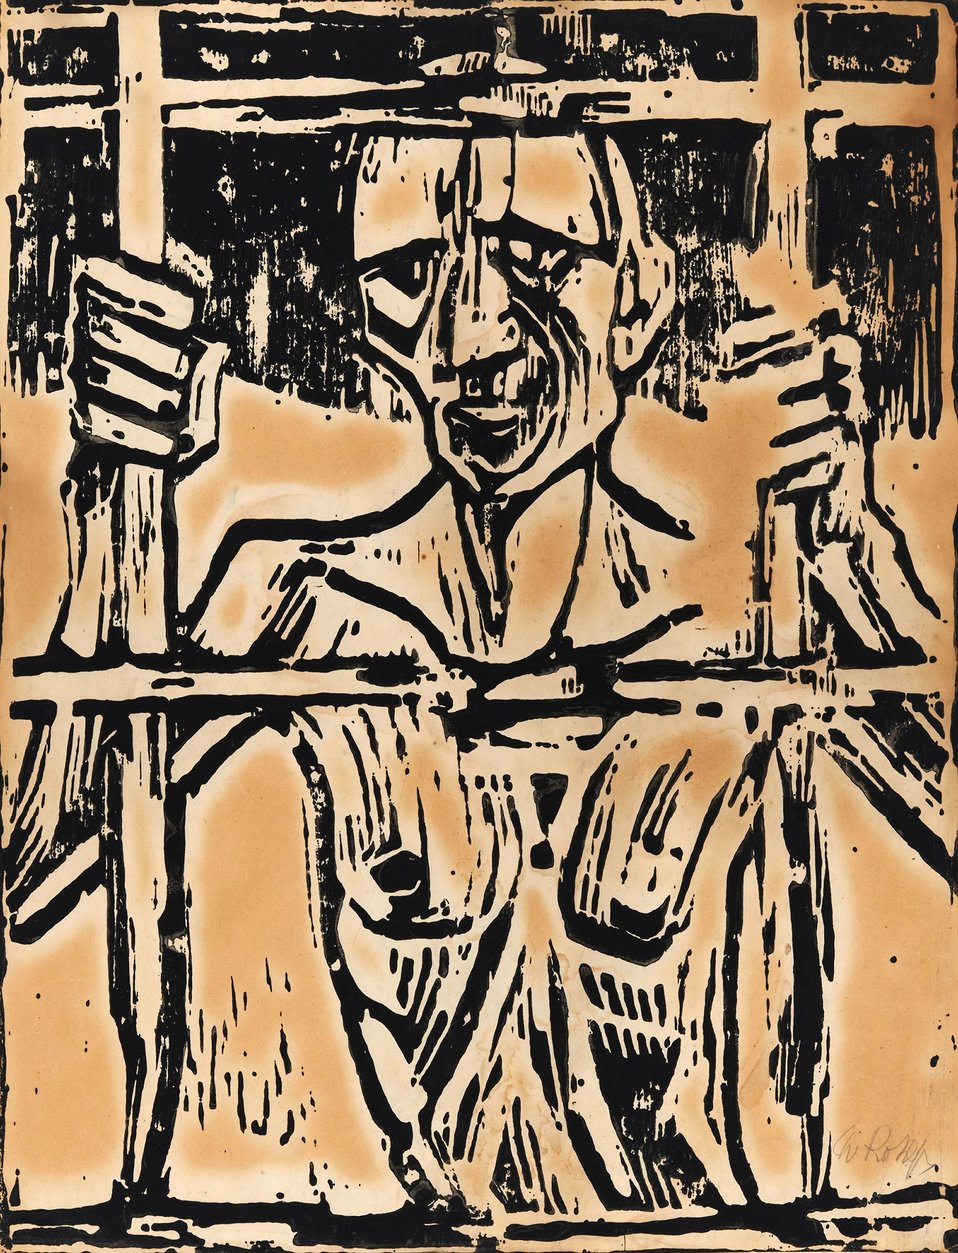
Der Gefangene. Holzschnitt auf Papier. 61 x 47 cm. Signiert.